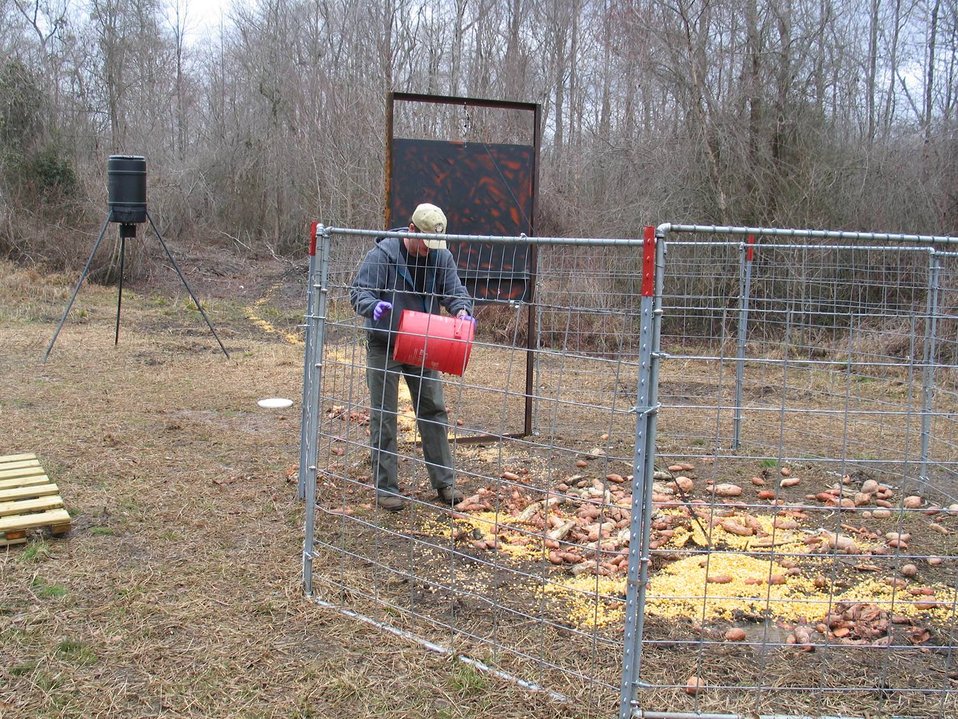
The U.S. Department of Agriculture's (USDA) Animal Plant Health and Inspection Service (APHIS) Wildlife Services (WS) program provides technical advice to landowners, state agencies and others, as well as direct management assistance for feral swine problems in more than 30 states. WS field specialists help to reduce feral swine damage by trapping, shooting, installing fencing/barriers, and modifying habitats.